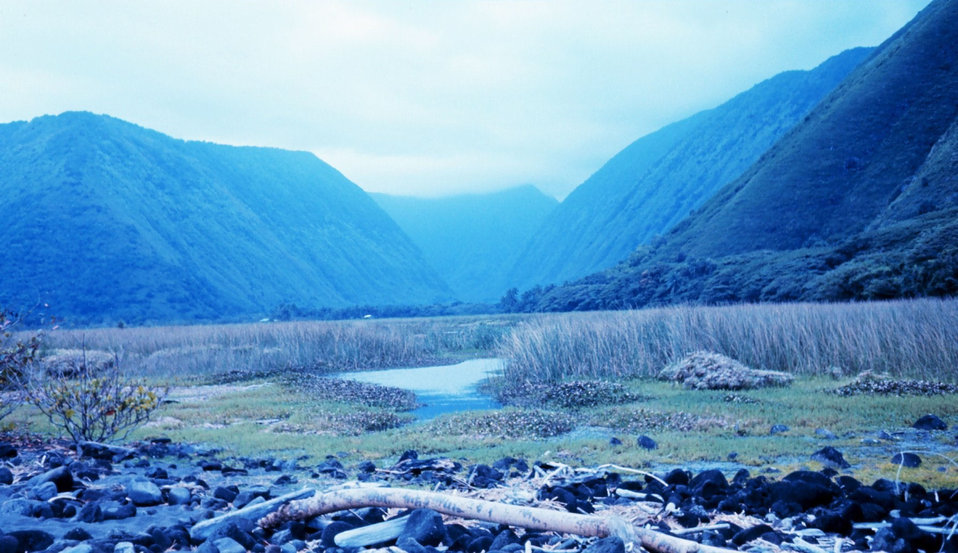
Looking south down the Waipio Valley